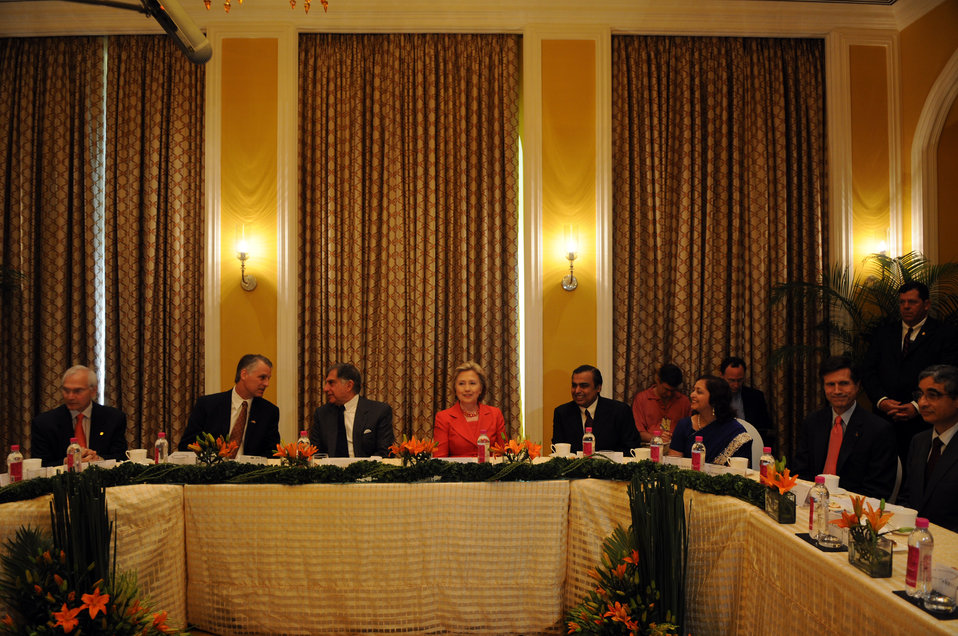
Secretary Clinton Meets With Business Leaders in Mumbai

U.S. Secretary of State Hillary Rodham Clinton meets with India's business leaders in Mumbai, India July 18, 2009. From left to right: Jamshyd N. Godrej, Chairman of the Board of Godrej and Boyce Manufacturing Company Limited; Timothy J. Roemer, U.S. Ambassador-Designate to India; Ratan Tata, Chairman of the Tata Group; Secretary Clinton; Mukesh Ambani, chairman and managing director of Reliance Industries; Swati Piramal, Director of Strategic Alliance and Communication at Piramal Healthcare Ltd.; Robert O. Blake, Assistant Secretary of State for South and Central Asia; O.P. Bhatt, Chairman of the State Bank of India.